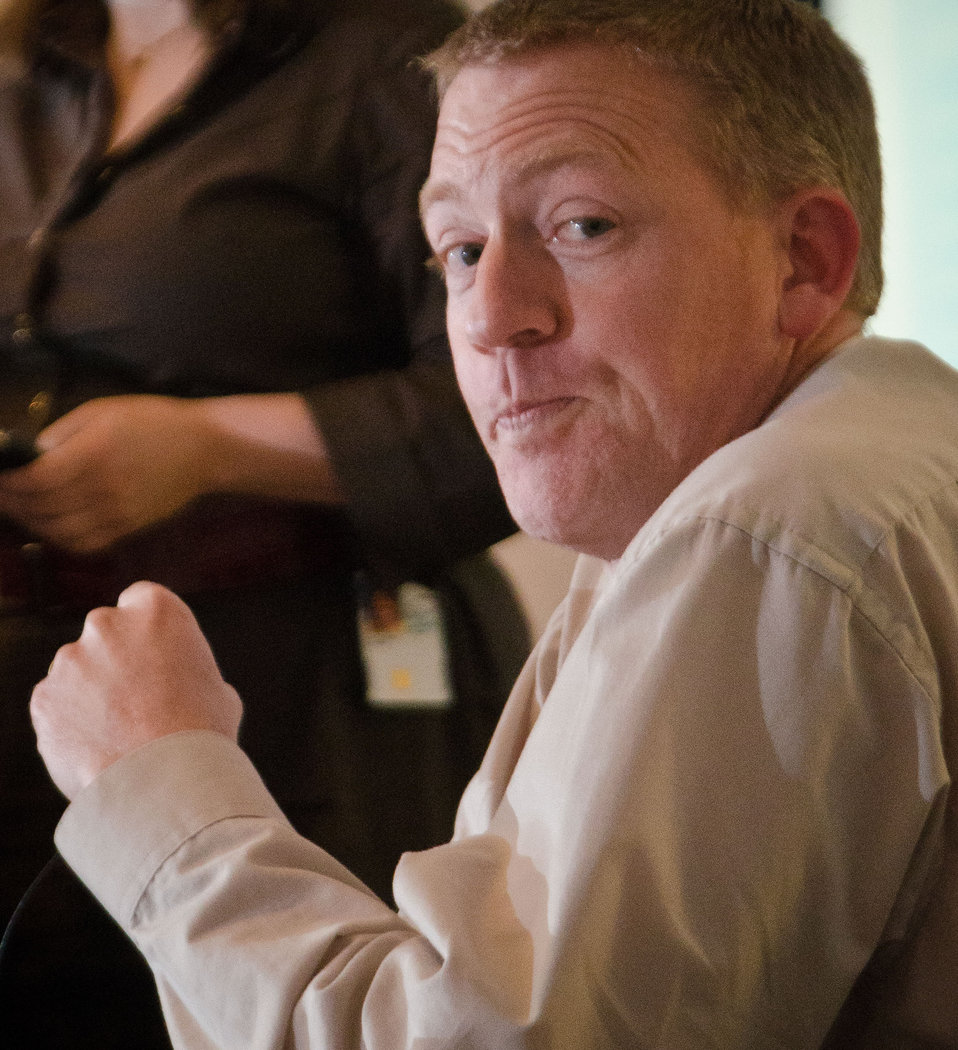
National renewable Energy Laboratory Professional Engineer Andy Aden, responds to a question during the Renewable Energy session on “Moving Renewable Energy Forward,” at the 2012 Agricultural Outlook Forum, “Moving Agriculture Forward, Growing, Innovating and Celebrating 150 Years” held at the Crystal Gateway Marriott Hotel in Arlington, Virginia, on Thursday, February 23, 2012. This year’s forum coincides with the 150th anniversary of the Department of Agriculture addressing economics, marketing, research, food safety, nutrition, conservation, rural development, alternative energy, trade and many other agricultural issues.